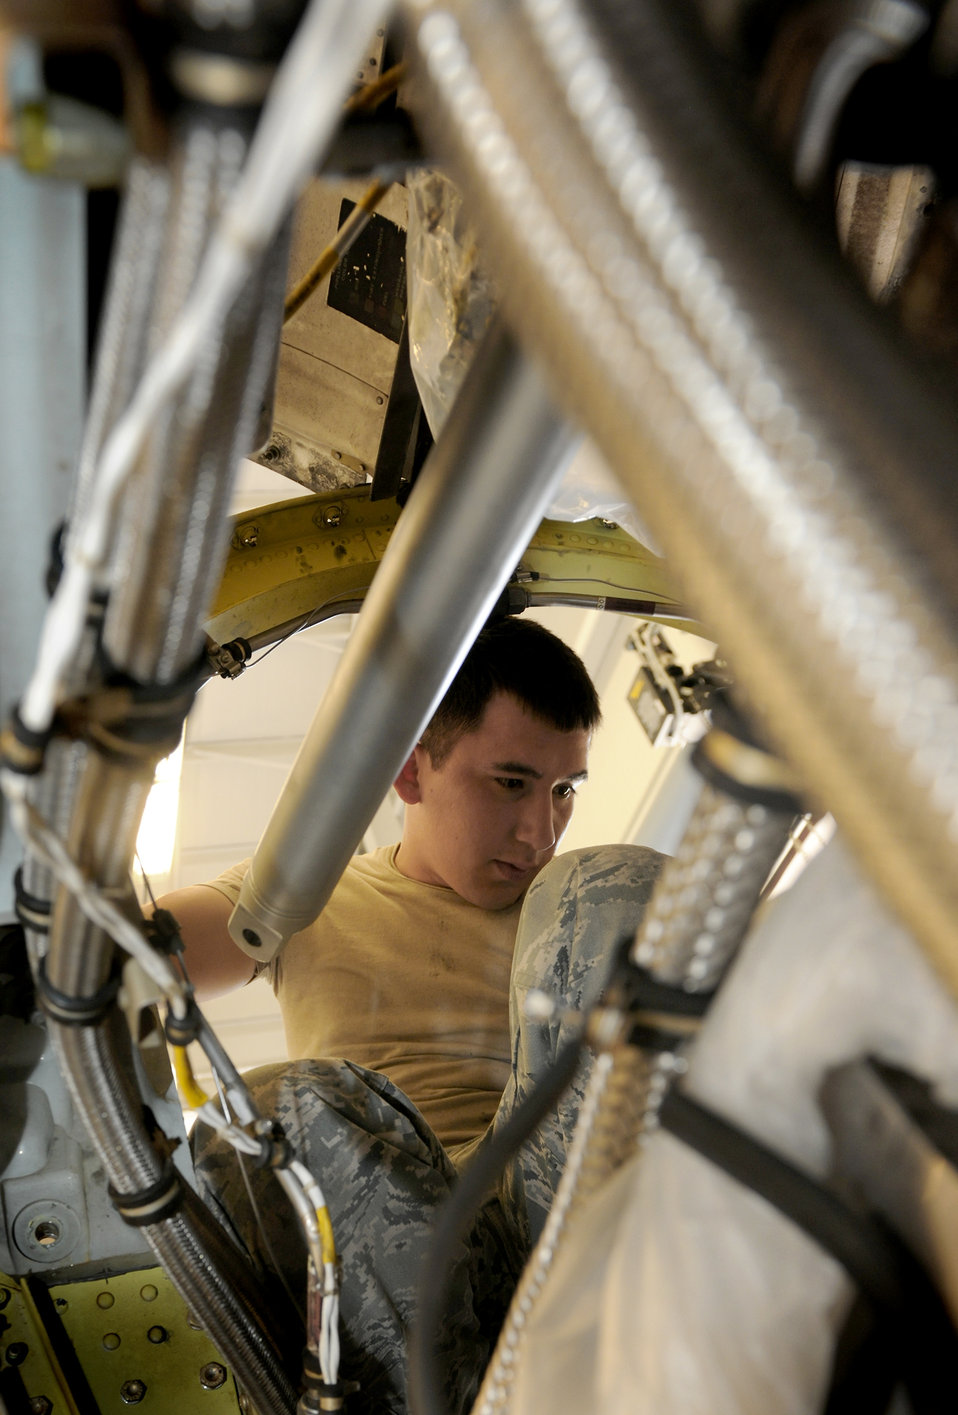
Engine mechanics cross train

Airman 1st Class Bobby Rodriguez sits in the back of an engine from an HC-130P/N King and prepares to install a reduction gearbox July 22, 2010, at Moody Air Force Base, Ga. Airman Rodriguez is a 23rd Component Maintenance Squadron aerospace propulsion apprentice.